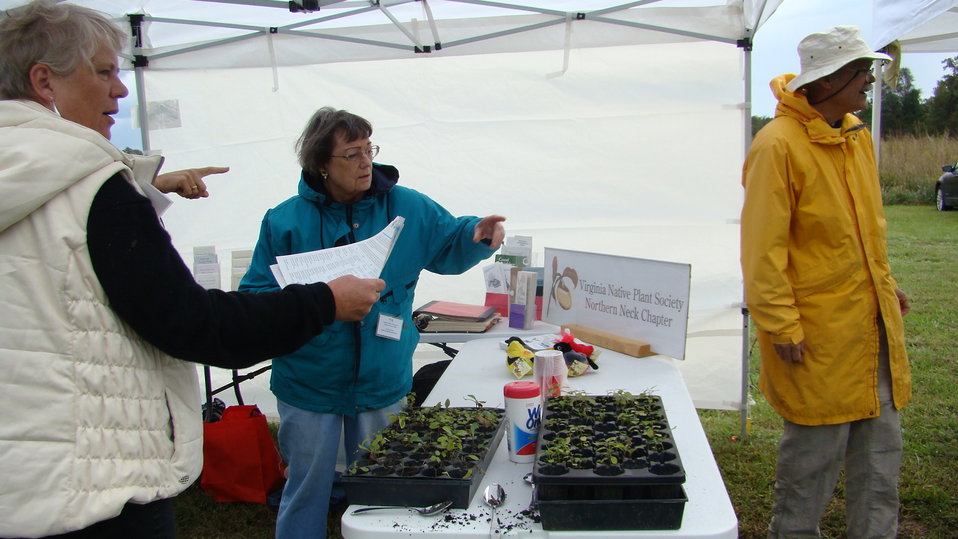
Rappahannock River Valley NWR 15th Anniversary

Virginia Native Plant Society offered native plants as take-homes for attendees.